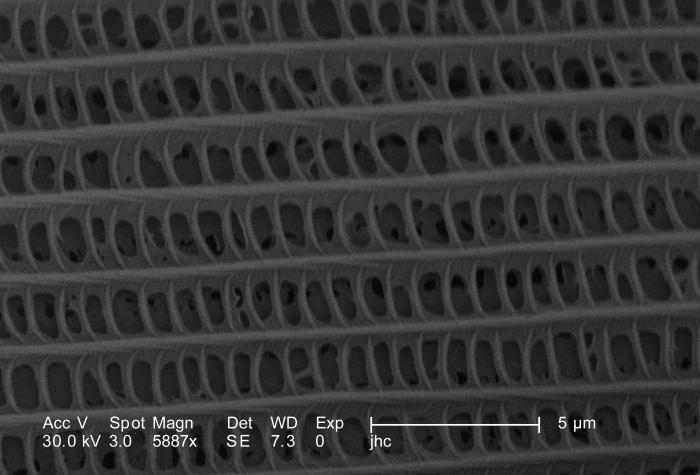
Under a high magnification of 5887X, this scanning electron micrograph (SEM) revealed some of the ultrastructural exoskeletal morphology displayed by an unidentified white moth, which had been found deceased on the ground in the suburbs of Decatur, Georgia. At this magnification, the surface detail of one of the insect's scales was revealed in all its intricacy. It's this kind of design, that offered a light-weight construct, which allowed the moth to achieve unencumbered airborne flight.